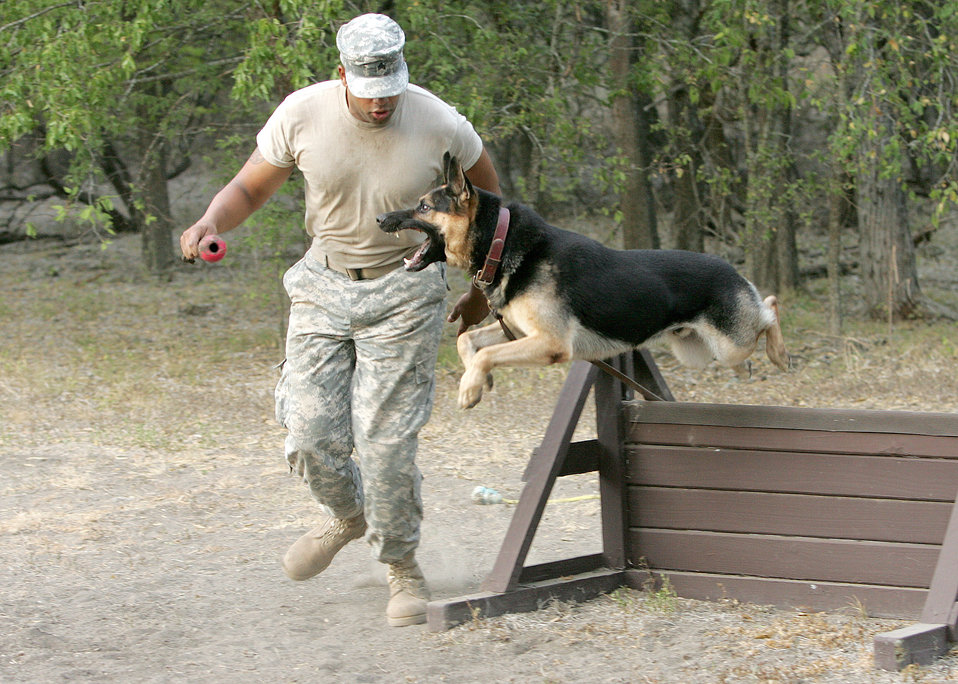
Total Force MWD training

Ceasar, a military working dog in training, leaps over a hurdle as he keeps his eyes on the Kong toy Army Sgt. Carlos Cruz is holding at Lackland Air Force Base, Texas, Aug. 29. The Kong is used as a reward for the military working dogs. Sergeant Cruz is a military working dog trainer and is with the 341st Training Squadron at Lackland.